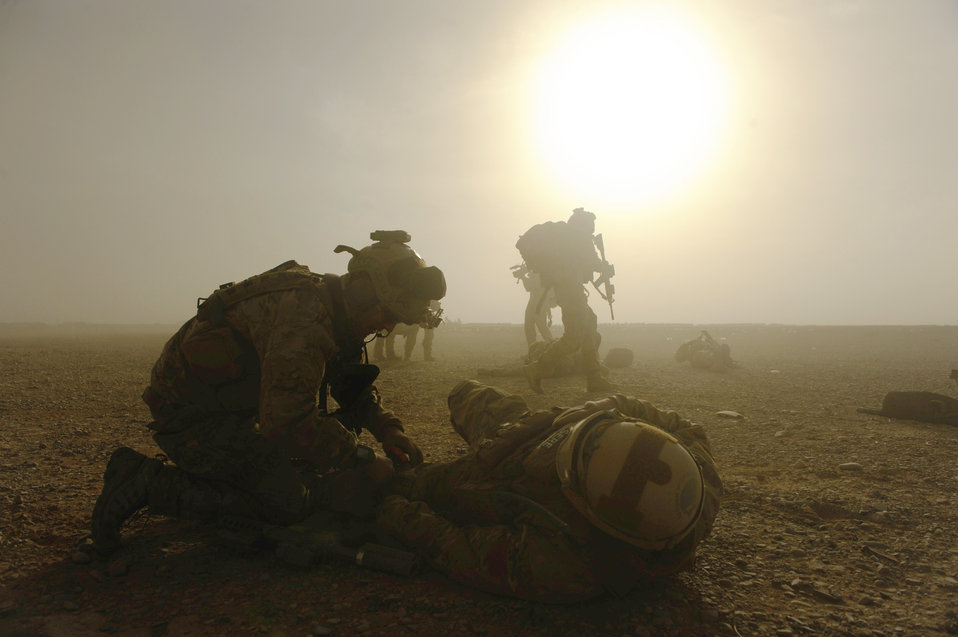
CSAR Airmen airlift wounded Soldier

Pararescuemen from the 46th Expeditionary Rescue Squadron respond to a simulated, mass-casualty scenario Dec. 24, 2010, near Kandahar, Afghanistan. The scenario was planned as part of Tech. Sgt. Anthony Wood's qualification to become an element leader.